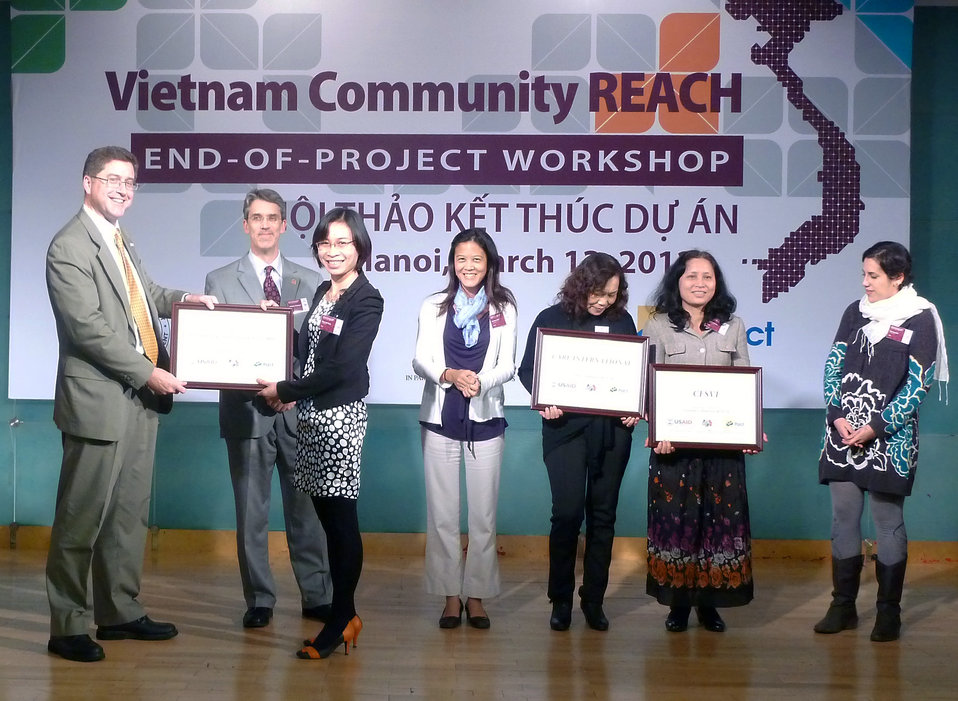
USAID, PEPFAR, and Pact award certificates to local and international partners for their work in addressing HIV in Vietnam

Community REACH project close-out with USAID and implementing partner, Pact